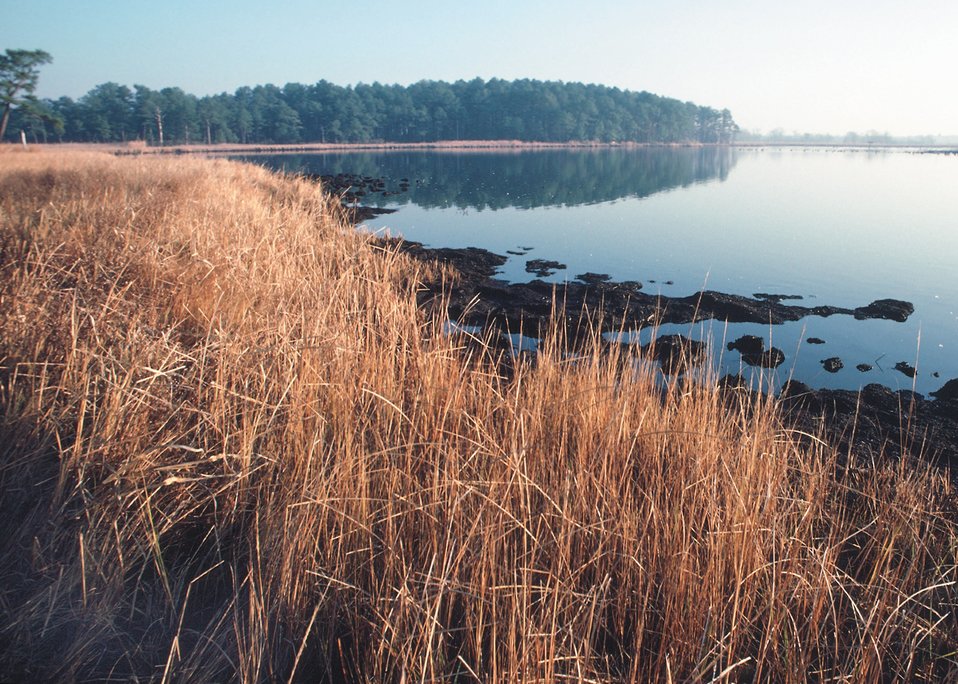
The U.S. Department of Agriculture’s (USDA) Natural Resources Conservation Service (NRCS) is working with partners to test innovative water quality trading tools that will help improve the water quality of the Chesapeake Bay.